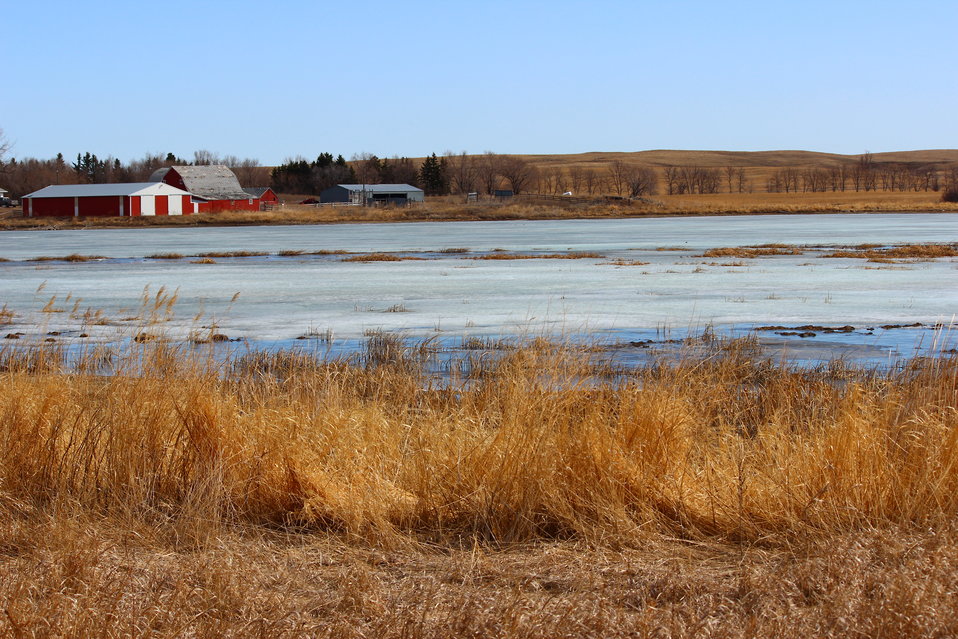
Ketterling WPA

A view from the south end of the Ketterling WPA in the Kulm Wetland Management District. This Waterfowl Production Area is in Logan County.